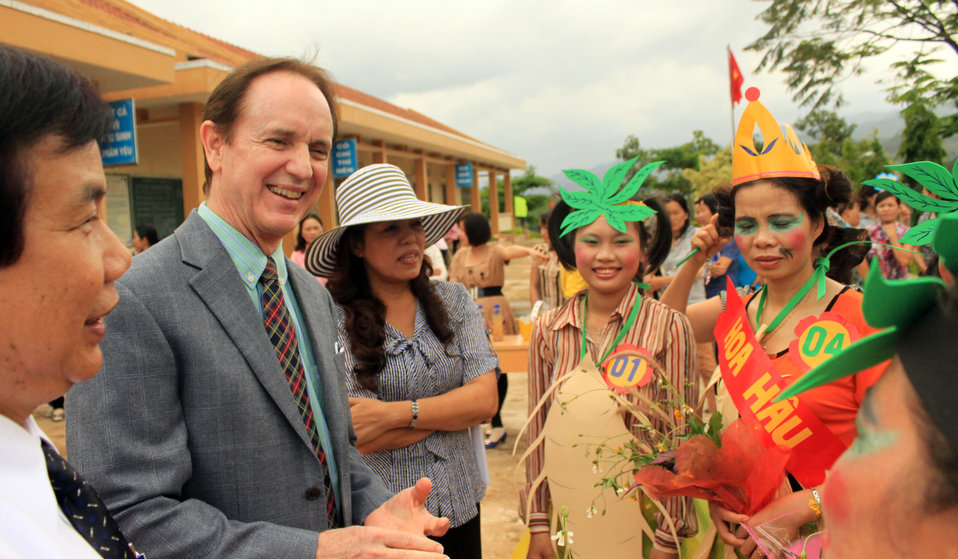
USAID Mission Director Francis Donovan joins local teachers as they practice what they learned from USAID-funded intensive training courses